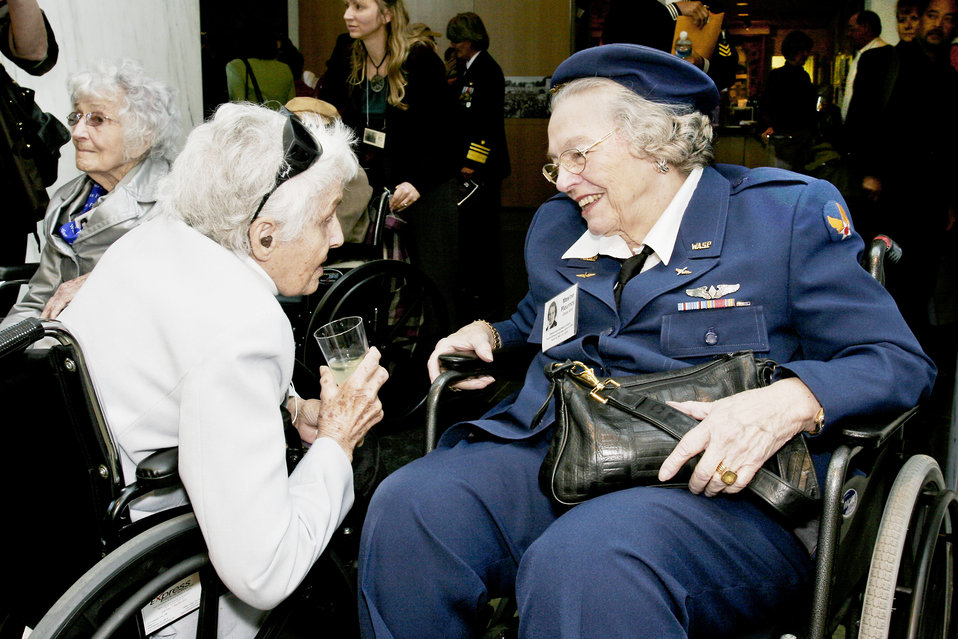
Women pilots of World War II inspired generations

Ola